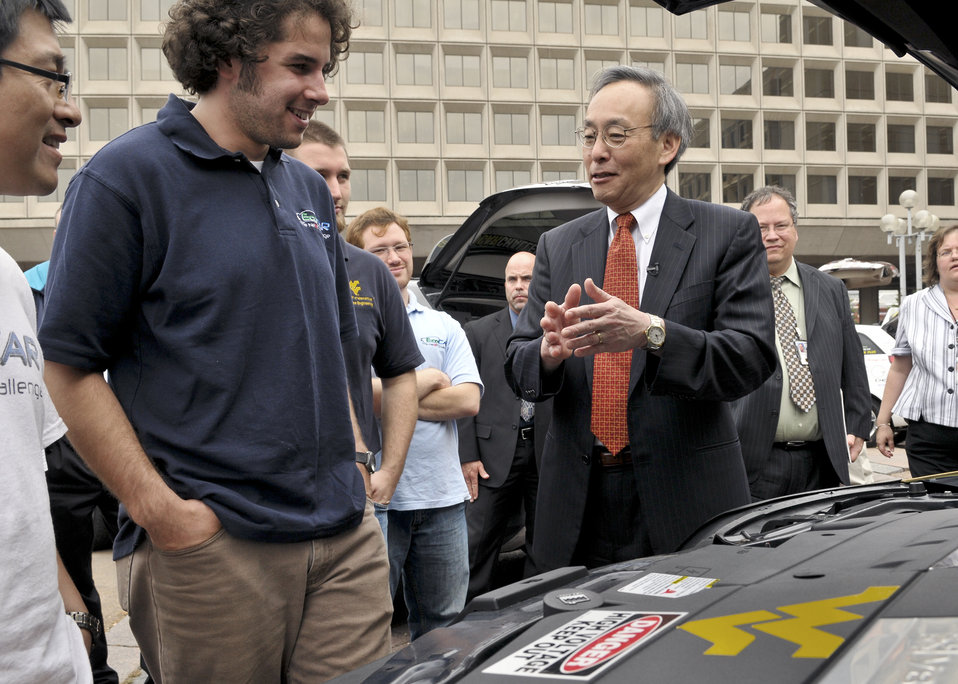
EcoCAR Challenge Finish Line 3 of 8

US Department of Energy Secretary Steven Chu speaks with the West Virginia EcoCAR team.